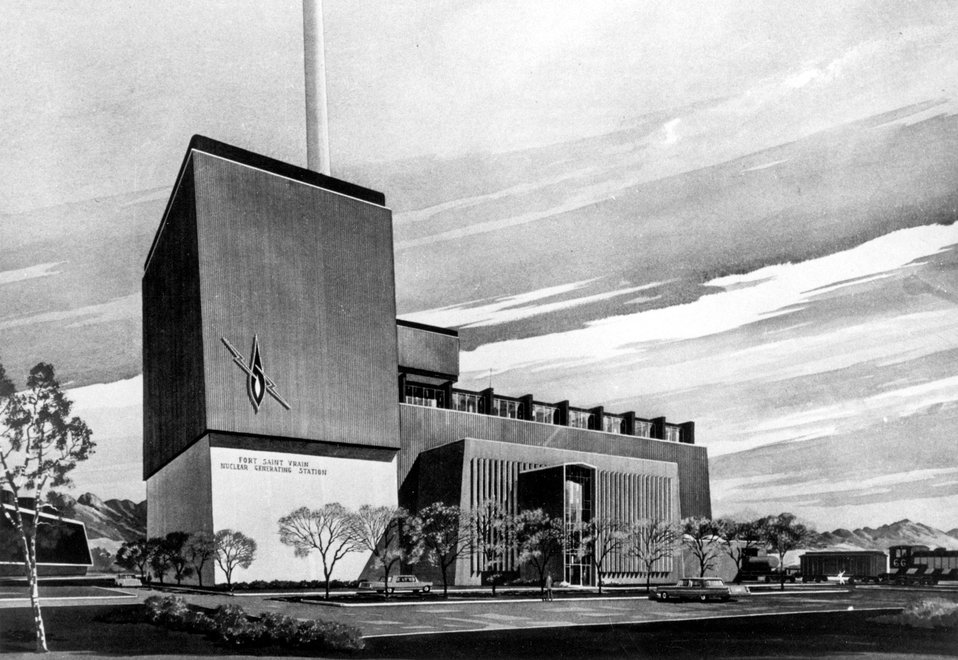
Artist's concept shows the 330 Mwe Fort St. Vrain nuclear generating station to be built by the Public Service Company.